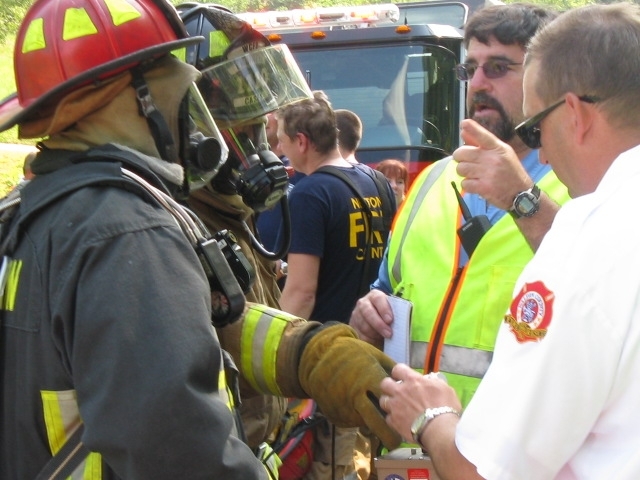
Georgia Hosts Multi-Agency WIPP Transportation Exercise

The on-scene incident commander briefs a responder during a WIPP transportation exercise in Georgia.